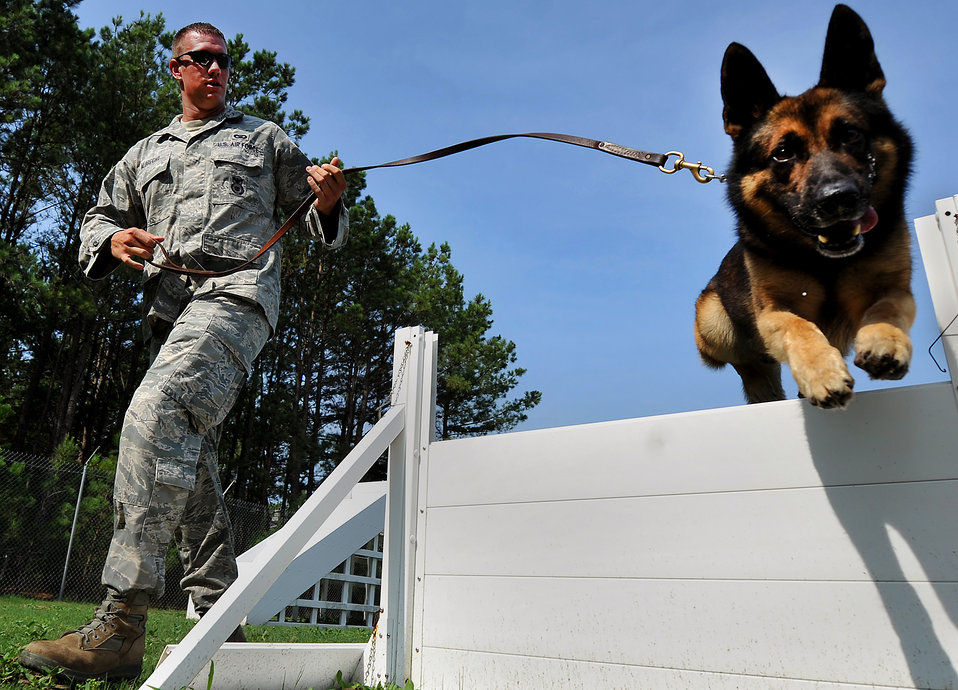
Up, up and away!

Staff Sgt. Jason Albrecht runs military working dog, Markey, through an obstacle course July 13, 2011, Shaw Air Force Base, S.C., during an obedience training session. Albrecht is a senior military working dog handler assigned to the 20th Security Forces Squadron, and Markey is a military working dog.